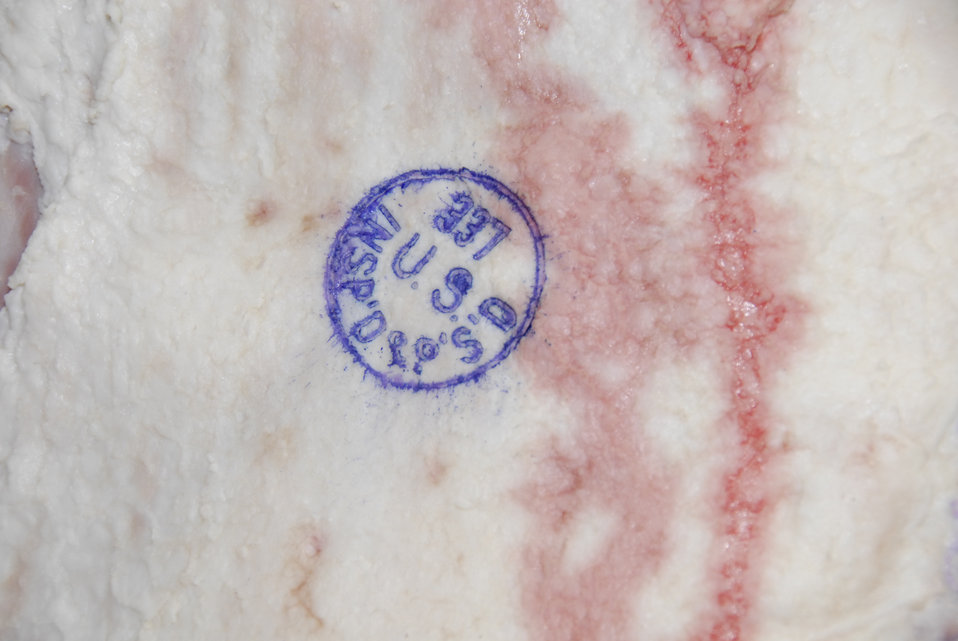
A side of beef at the Sam Kane beef slaughterhouse in Corpus Christi, Texas on June 10, 2008 has been stamped with U.S. Department of Agriculture (USDA) Food Safety and Inspection Service (FSIS) inspection stamp.